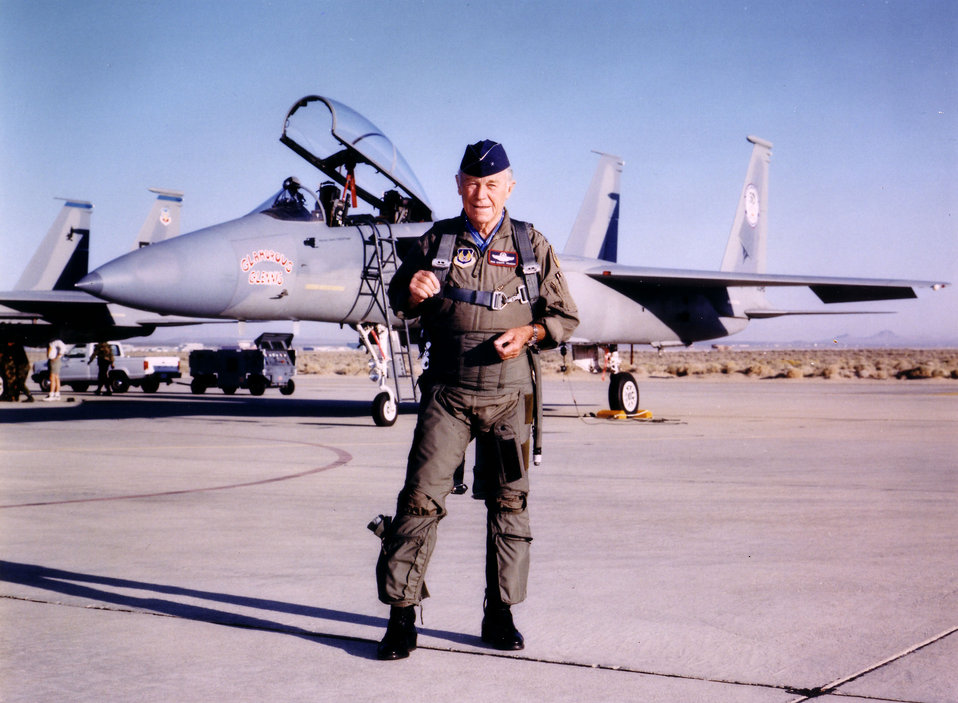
Chuck Yeager, 50th Anniversary of Mach One Flight

October 1997 -- Brigadier General Charles E.